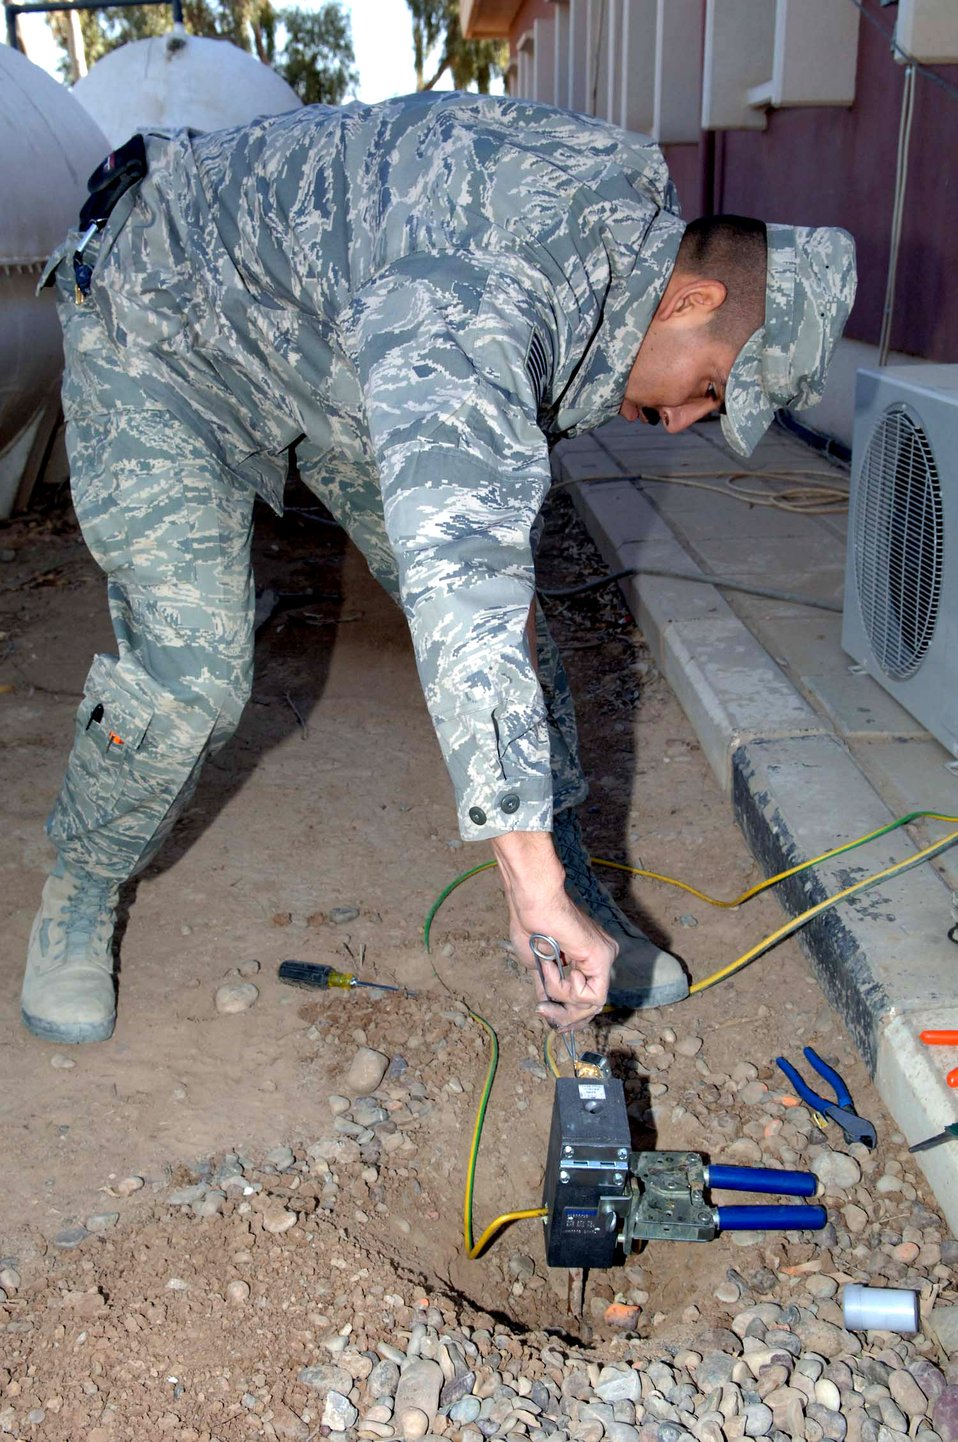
Let there be fire

Tech. Sgt. Victor Magana attempts to ignite exothermic welding powder Dec. 11 while working at Balad Air Base, Iraq. The welding powder is used to fuse two pieces of ground wire together to prevent static electricity from damaging nearby communication lines. Sergeant Magana is an electrician assigned to the 332nd Expeditionary Civil Engineer Squadron and is deployed from Barksdale Air Force Base, La.